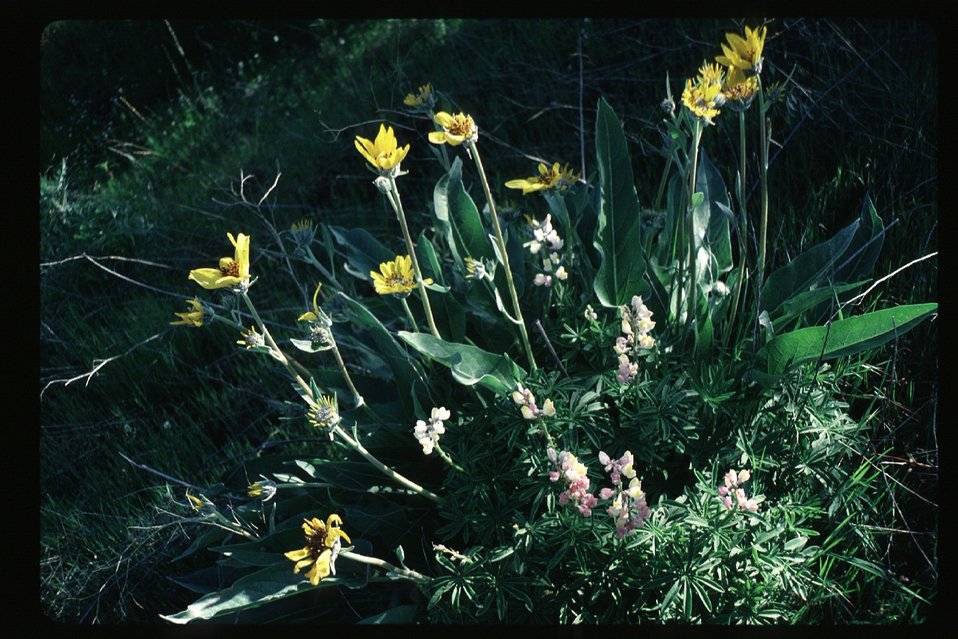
Arrowleaf Balsum Root Balsamorhiza Sagitata Scenic Wildflowers Vegetation Grass and brush USRD Upper Snake River District